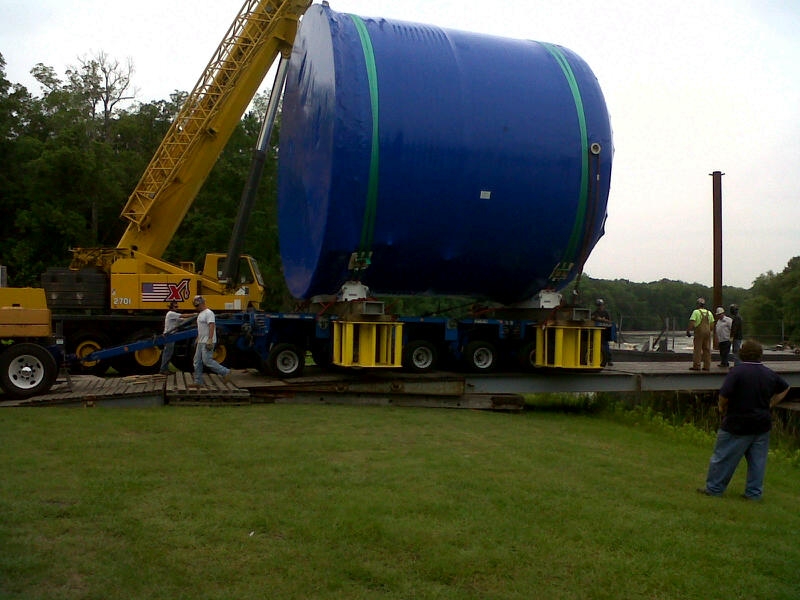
SRS Processing Tanks

Large nuclear material processing tanks destined for Savannah River Site's (SRS) Salt Waste Processing Facility, currently under construction, began arriving May 16, 2012, in Hardeeville, S.C., by sea barge for offloading and tractor-trailer transport to SRS.